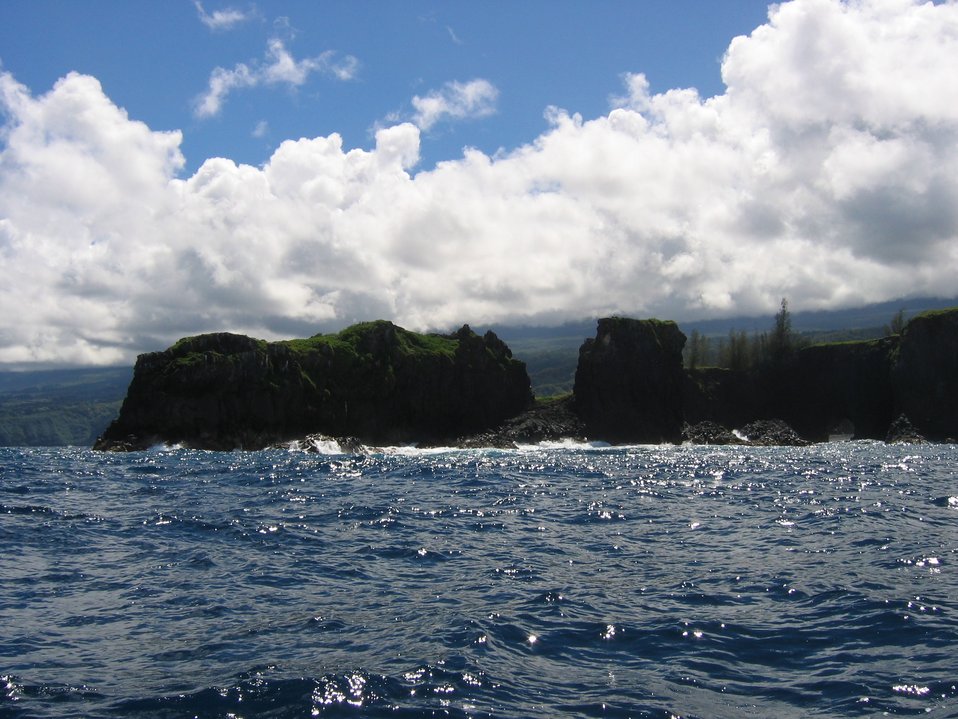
Coast of eastern Maui.